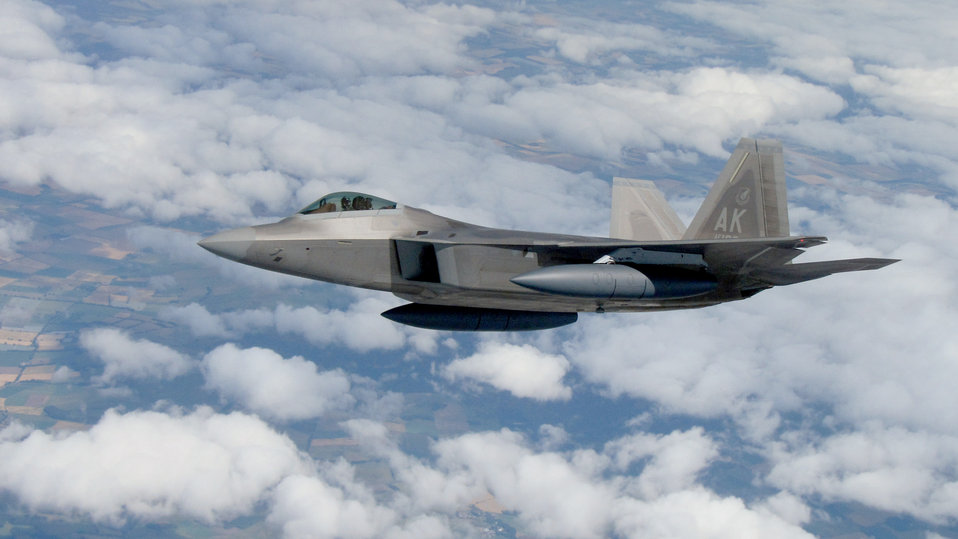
Coronet

An F-22 Raptor from Elmendorf Air Force Base, Alaska, hangs off the wing of a KC-135 en route to the United States July 27, 2010. By sticking close to the tanker, the fighter could regularly top off its fuel tanks to ensure it had enough fuel to reach safety in the event it had to land unexpectedly. The tanker is assigned to the 100th Air Refueling Wing at Royal Air Force Mildenhall, England.